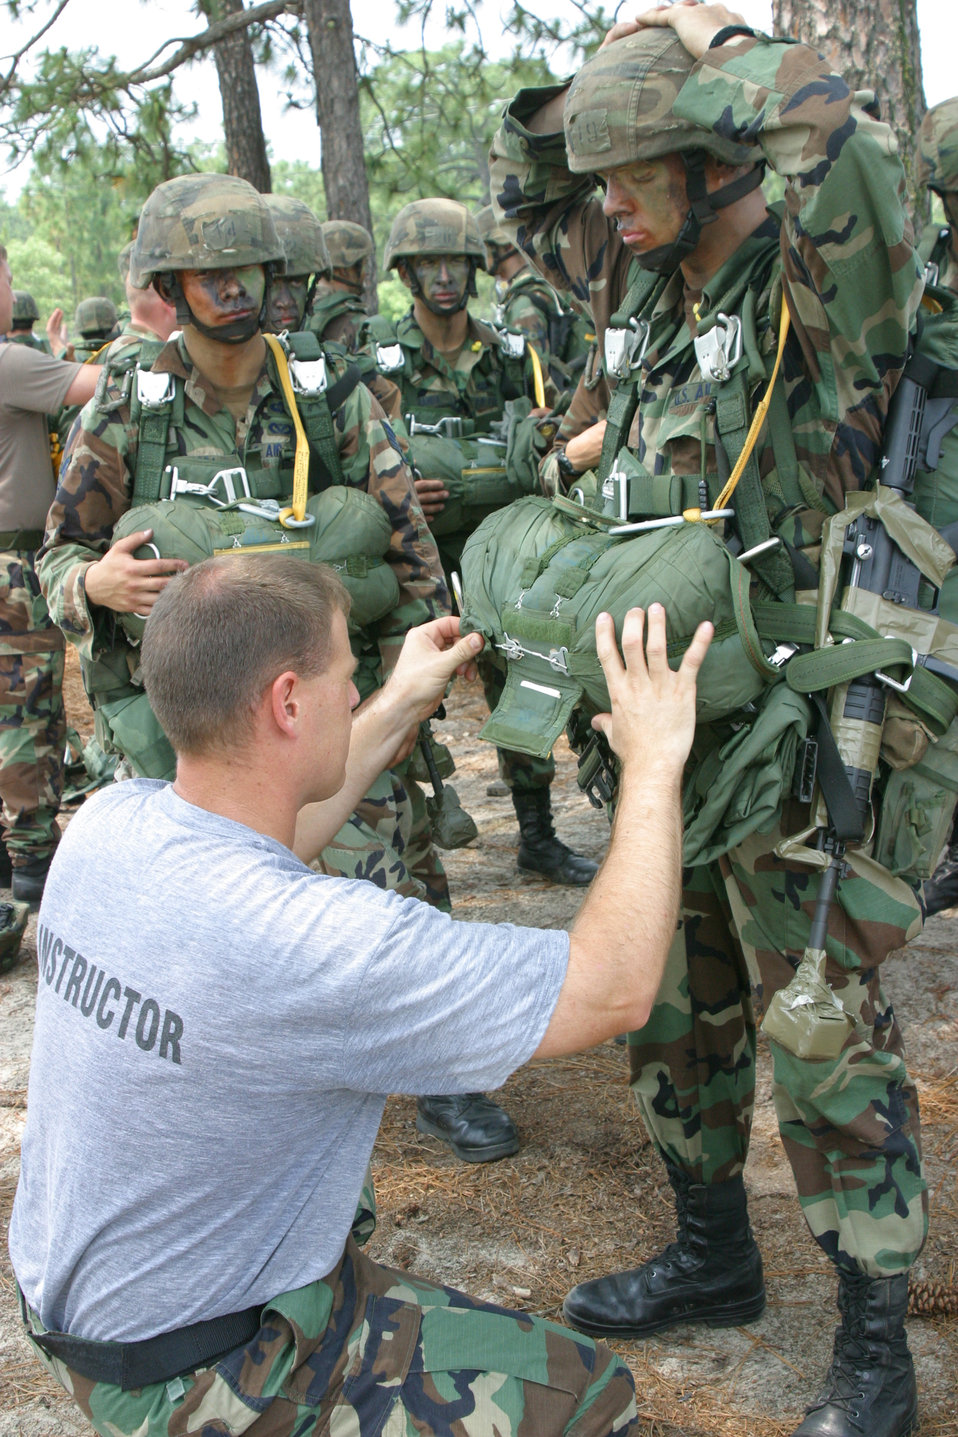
Airmen train to wear scarlet beret

CAMP MACKALL, N.C. -- Instructors help students prepare for their final Combat Control School static-line jump as part of a field exercise here. All students must meet rigorous standards to graduate the course and earn the right to wear the scarlet beret.